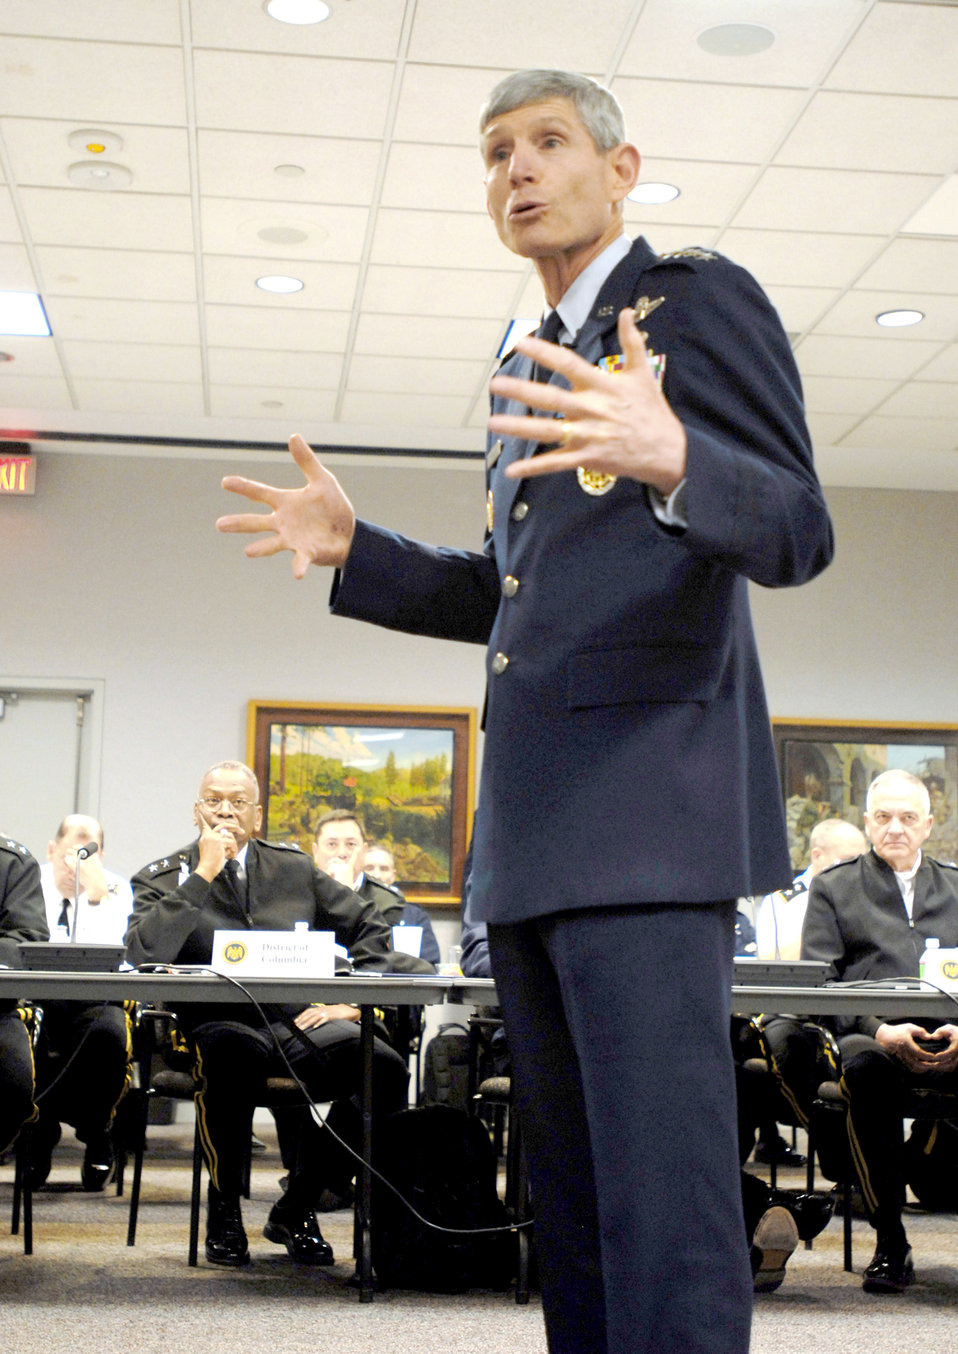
General Schwartz

Air Force Chief of Staff Gen. Norton Schwartz addresses the National Guard's top officers and enlisted leaders Feb. 28, 2011, during the 2011 General Senior Leadership Conference at in Arlington, Va.